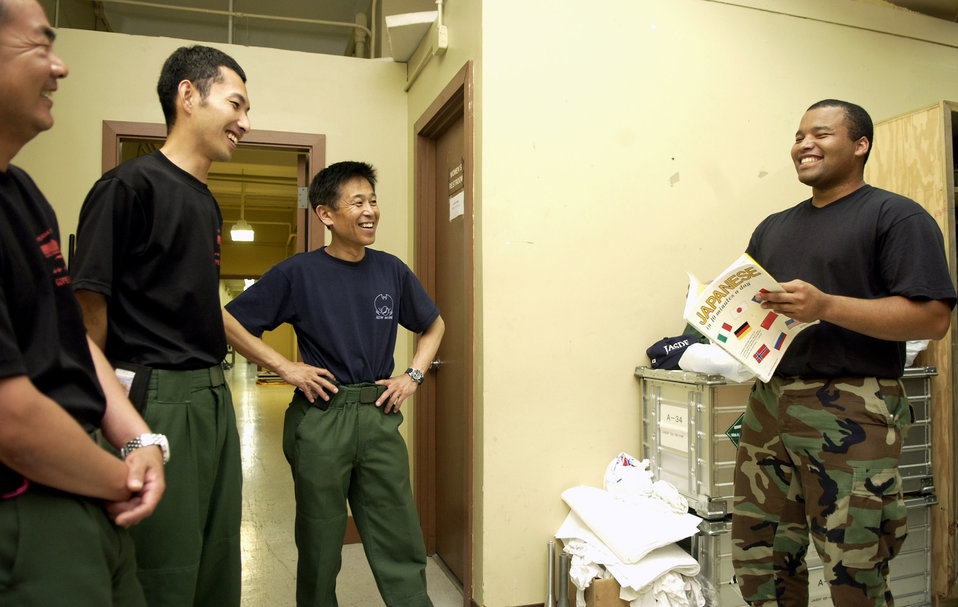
Maintenance crews prep fighters at Cope North

Airman 1st Class Jonathan Reynoso uses a Japanese to English translation book to talk with members of the Japan Air Self Defense Force during Exercise Cope North June 14 at Andersen Air Force Base, Guam. Airman Reynoso is assigned to the 522nd Expeditionary Force Squadron. Cope North is a bilateral field training exercise conducted to increase combat readiness and interoperability of the United States and JASDF, concentrating on coordination and evaluation of air tactics, techniques, and procedures between U.S. forces and the JASDF.